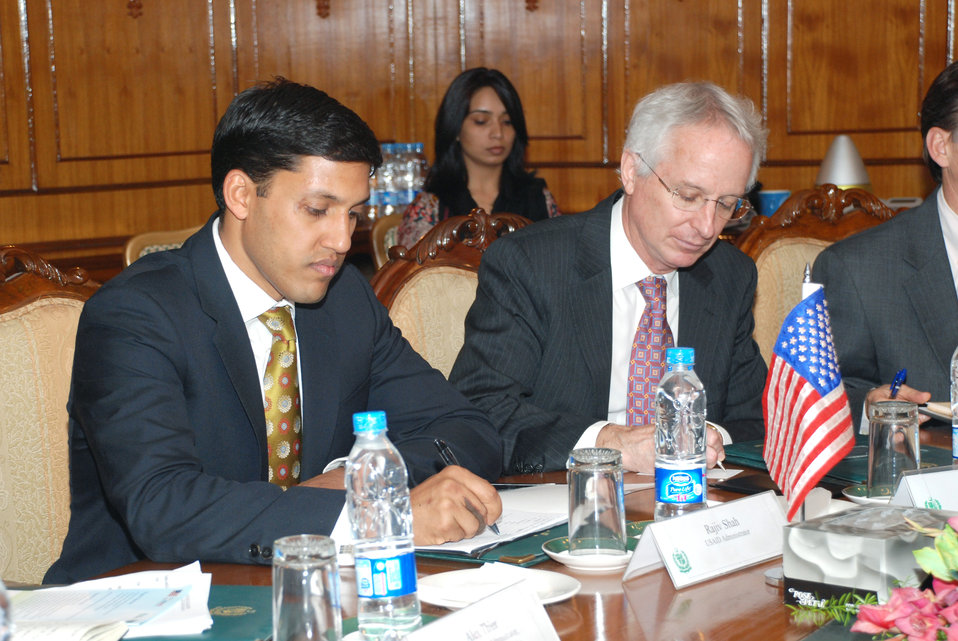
US officials Meeting with Minister of Foreign Affairs, Assistance to Pakistan Remains Strong at Islamabad on April 14, 2012